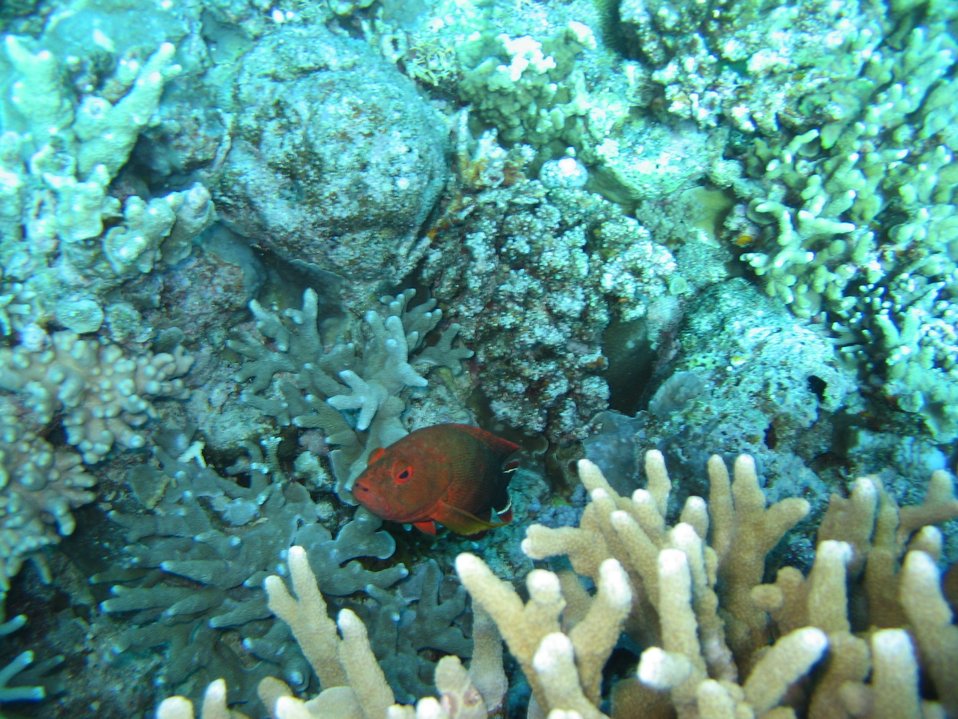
Unidentified red fish